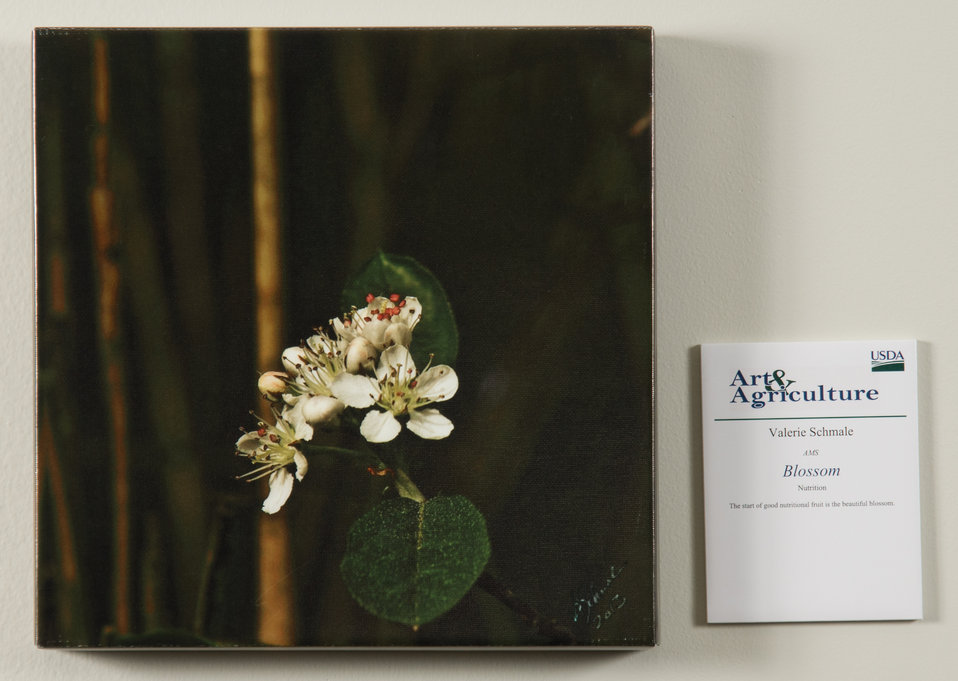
Online Viewer's Choice entries of the 2013 Art & Agriculture, Tuesday, July 9, 2013, in the South Building, Washington, D.C. Themes were expressed by employees from across the department and the contest was open to full-time and part-time USDA employees. Winning artwork will be displayed till the end of the year. U.S. Artistic expression is a creative outlet that is vital for an individual to grow and develop.